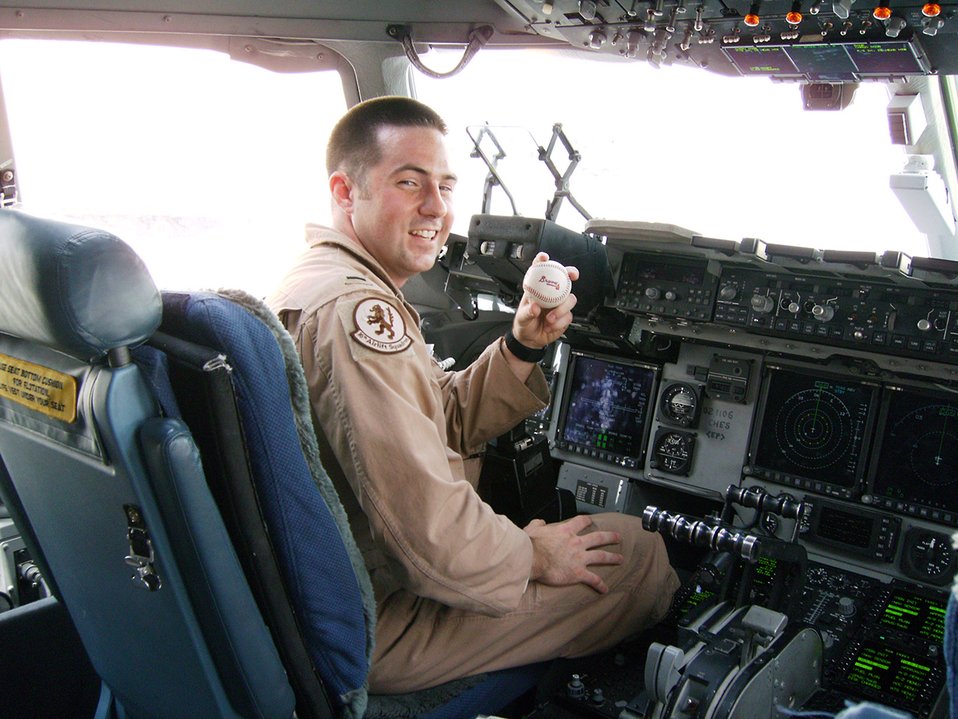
'Brave' baseballs make way around deployed bases

First Lt. Ryan Brewer, an 816th Expeditionary Airlift Squadron pilot, displays one of the Atlanta Braves baseballs being passed around deployed locations. The Georgian native recorded a shout out for the Atlanta home game to be played Sept. 18, on the Air Force's 60th Anniversary. Atlanta will be hosting several events leading up to Air Force Week, Heritage to Horizons, celebration. to be held Oct. 8 to 14 in Atlanta.